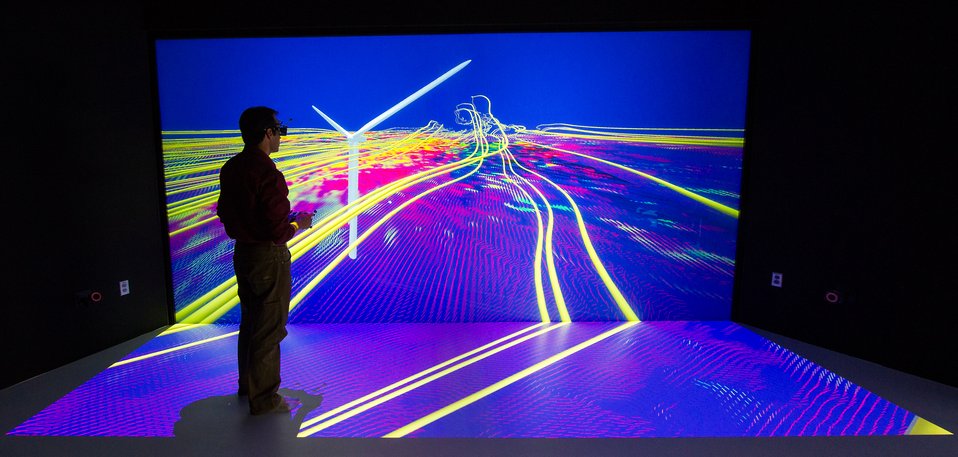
NREL Director, Dan Arvizu meets Mr. Olafur Grimsson, The President of Iceland

June 18, 2013 - NREL Senior Scientist Kenny Gruchalla, examines the velocity field from from a wind turbine simulation using a 3D model at the Insight Collaboration Laboratory during a tour of the Energy Systems Integration Facility (ESIF) at the National Renewable Energy Laboratory (NREL) in Golden, Colorado.